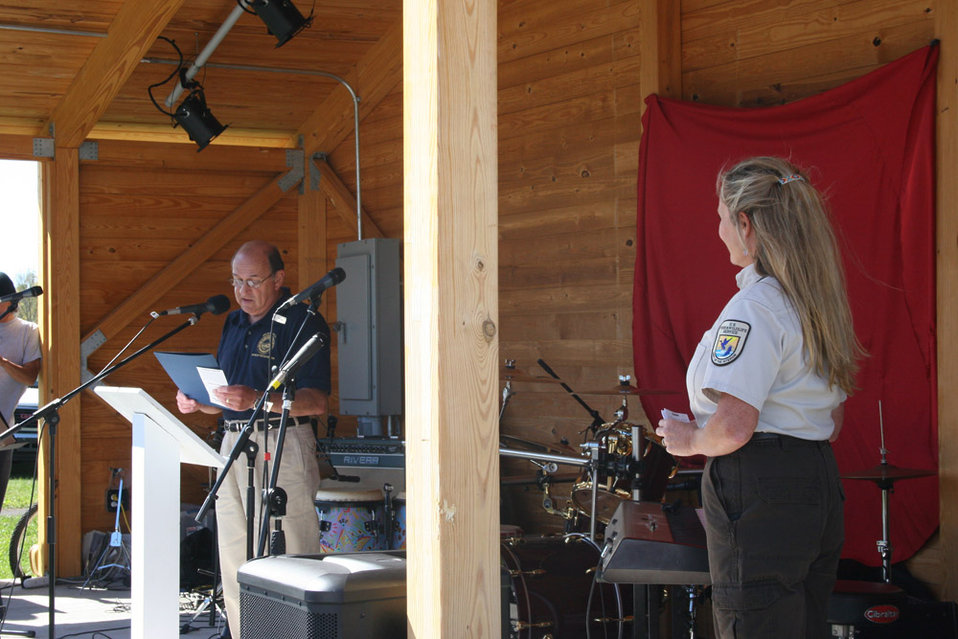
Freshwater Folk Festival

The 5th Annual Freshwater Folk Festival at White Sulphur Springs National Fish Hatchery in West Virginia.